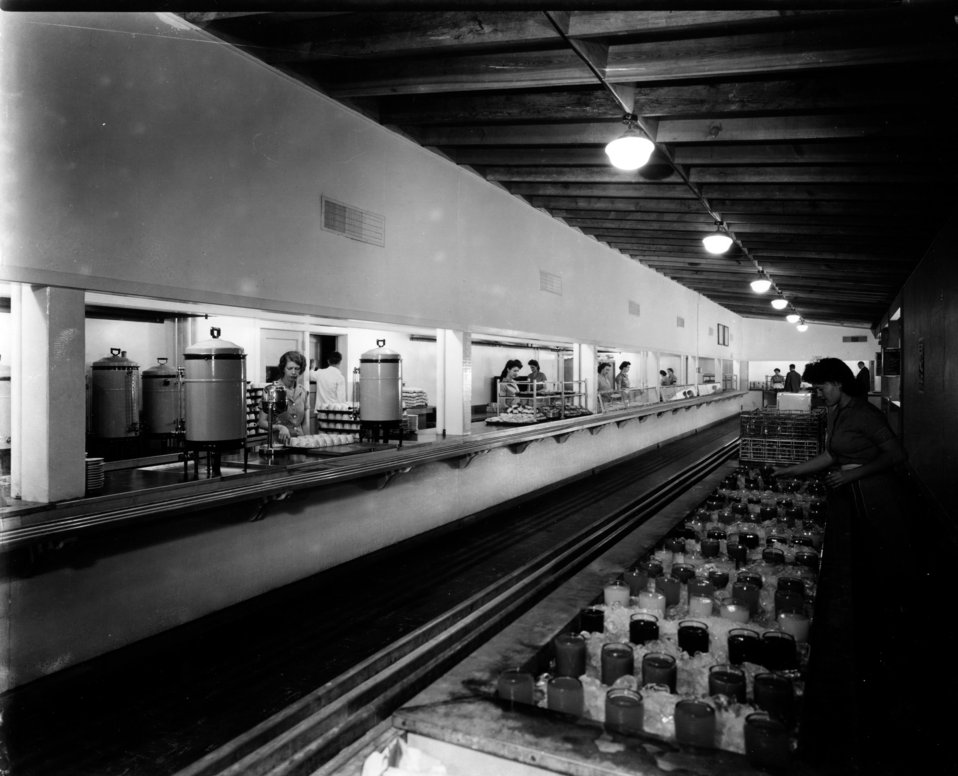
Business activity at Oak Ridge